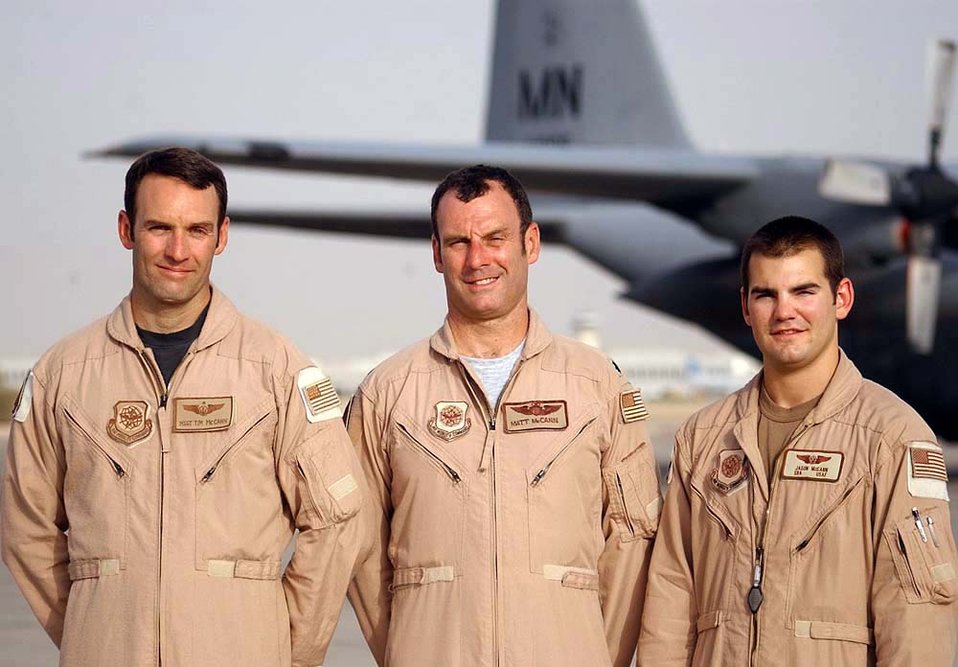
ANG is a family tradition

OPERATION IRAQI FREEDOM -- Brothers Master Sgt. Tim McCann (left) and Lt. Col. Matt McCann and their nephew, Senior Airman Jason McCann, deployed for the first time together to support Operation Iraqi Freedom. The McCann men are members of the Minnesota Air National Guard and assigned to the 772nd Expeditionary Airlift Squadron at a forward-deployed location. Matt is a C-130 Hercules pilot. Tim and Jason are C-130 loadmasters.